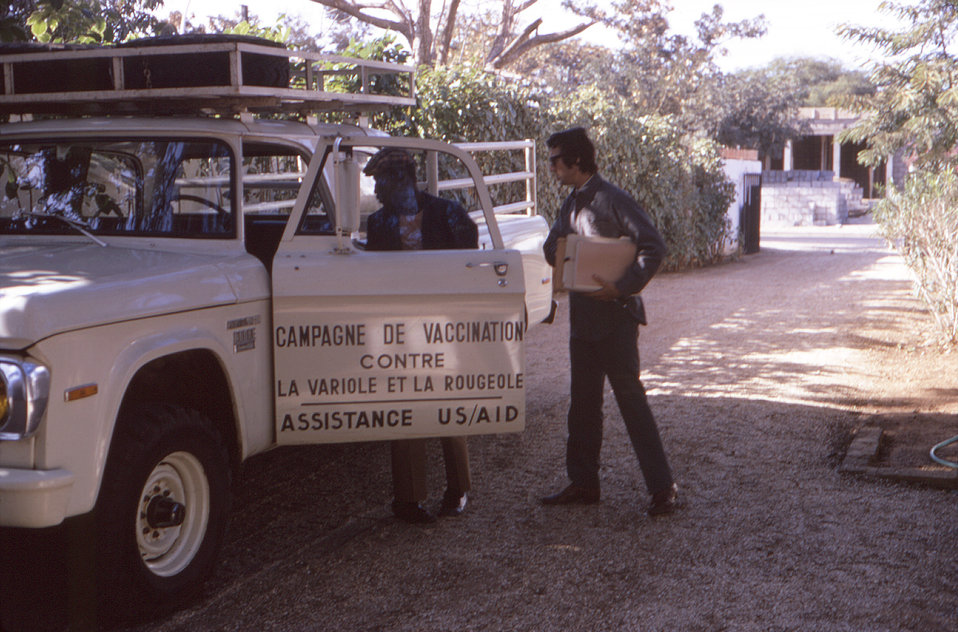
Photographed sometime in the early 1970s, during the worldwide smallpox eradication campaign, this image depicted two public health officials and their transport vehicle preparing to journey to neighboring towns in order to administer smallpox vaccinations, and acquire epidemiologic data about the epidemic at that time. This image was captured somewhere in French West Africa.The Smallpox Vaccine